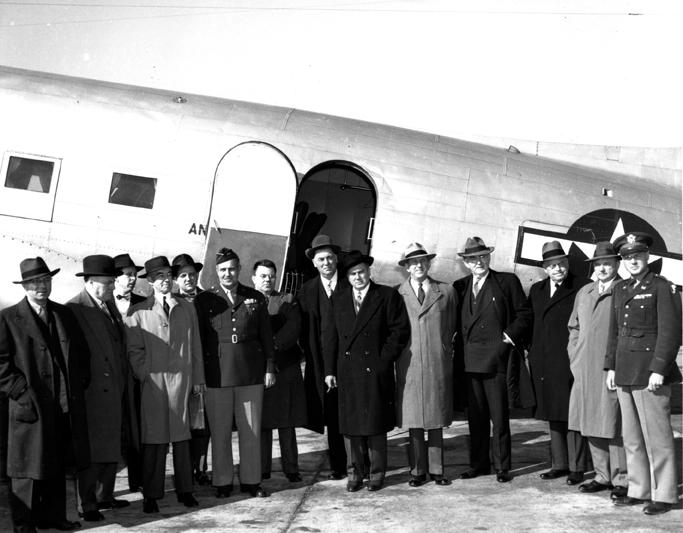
Meeting at Oak Ridge